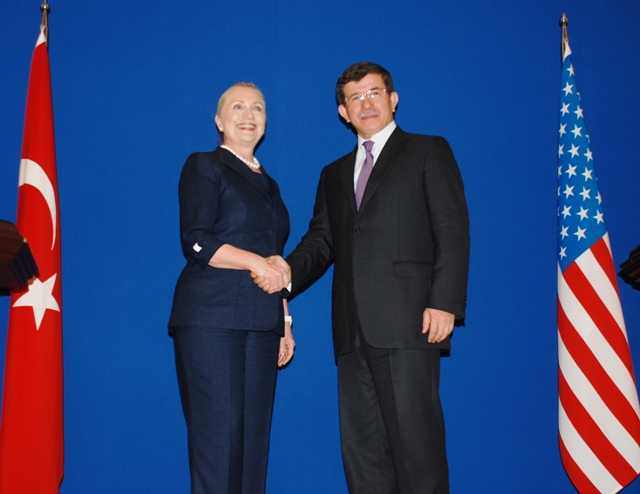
Secretary Clinton Shakes Hands With Turkish Foreign Minister Davutoglu

U.S. Secretary of State Hillary Rodham Clinton shakes hands with Turkish Foreign Minister Ahmet Davutoglu in Istanbul, Turkey, on August 11, 2012.